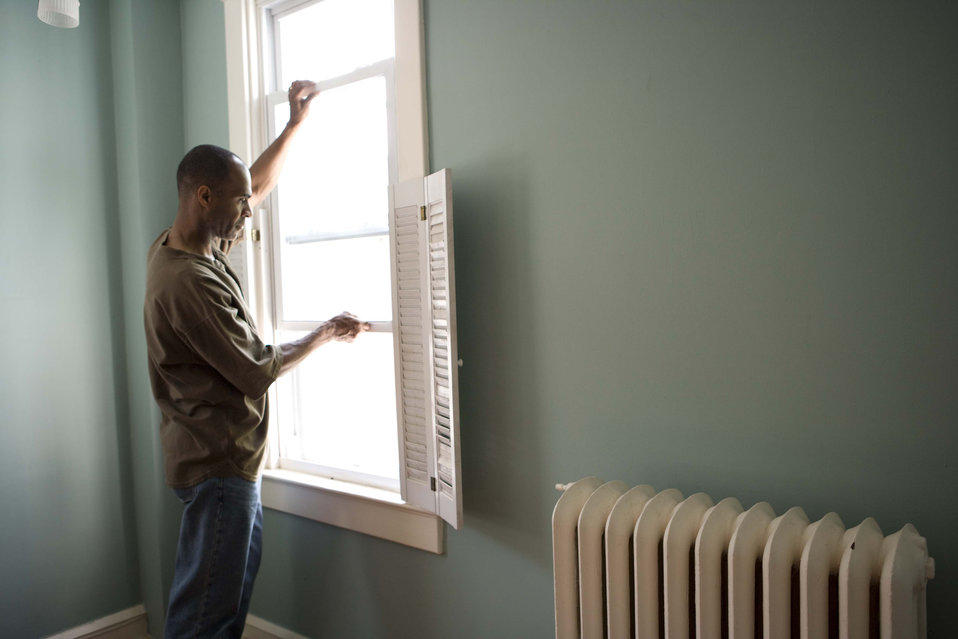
When renovating a home, you should use a damp sponge or cloth to clean dust collected on a window sill, as the dust may contain asbestos or lead-based paint. Home maintenance is an ongoing process for any homeowner, and here we see an African-American man as he was preparing a window in his home for a general cleaning.